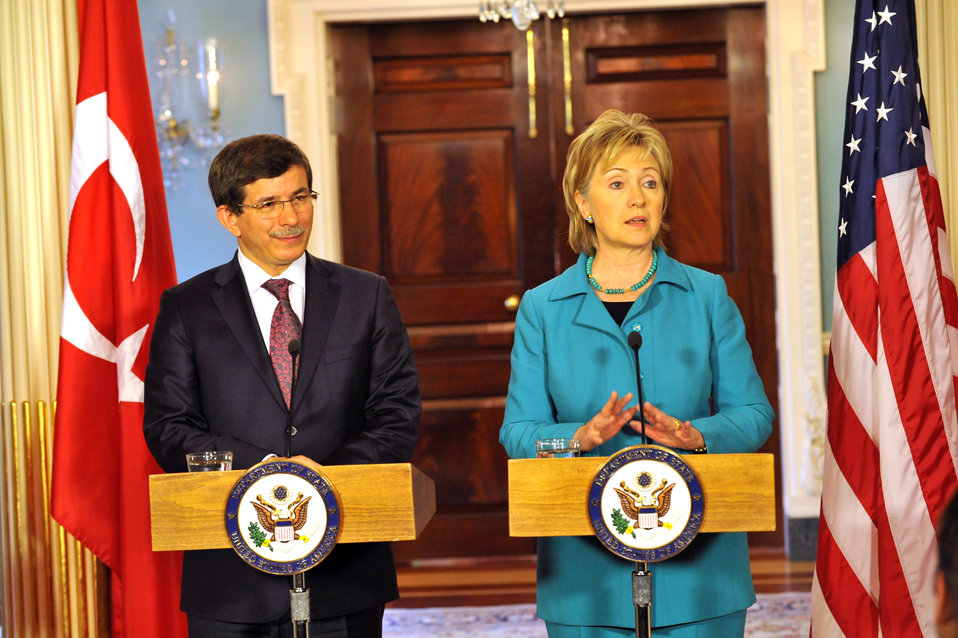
Secretary Clinton Meets With Turkish Foreign Minister

U.S. Secretary of State Hillary Rodham Clinton meets with Turkish Foreign Minister Ahmet Davutoglu at the U.S. Department of State in Washington, DC June 5, 2009.